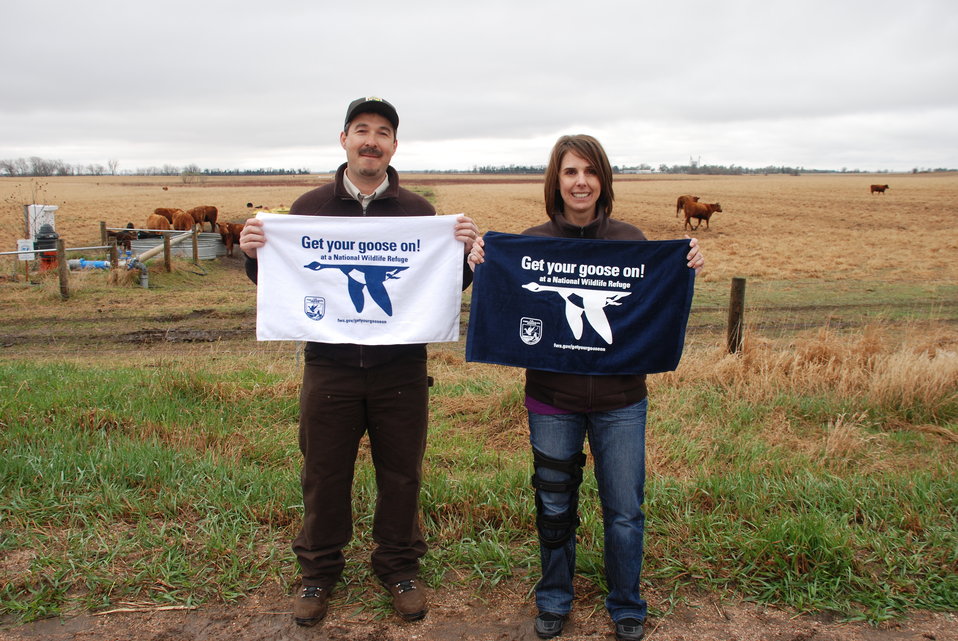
Get Your Goose On! at the Rainwater Basin Wetland Management District